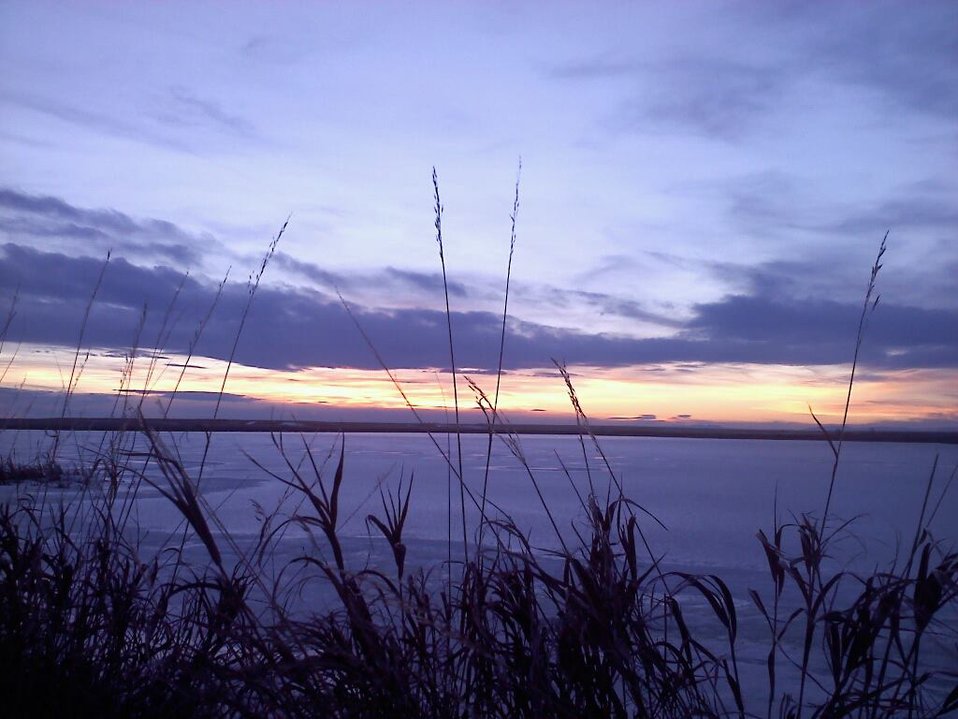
Sunrise On The Refuge

We get some amazing sunrises at the Refuge. You can see why Montana is nicknamed 'Big Sky Country!'